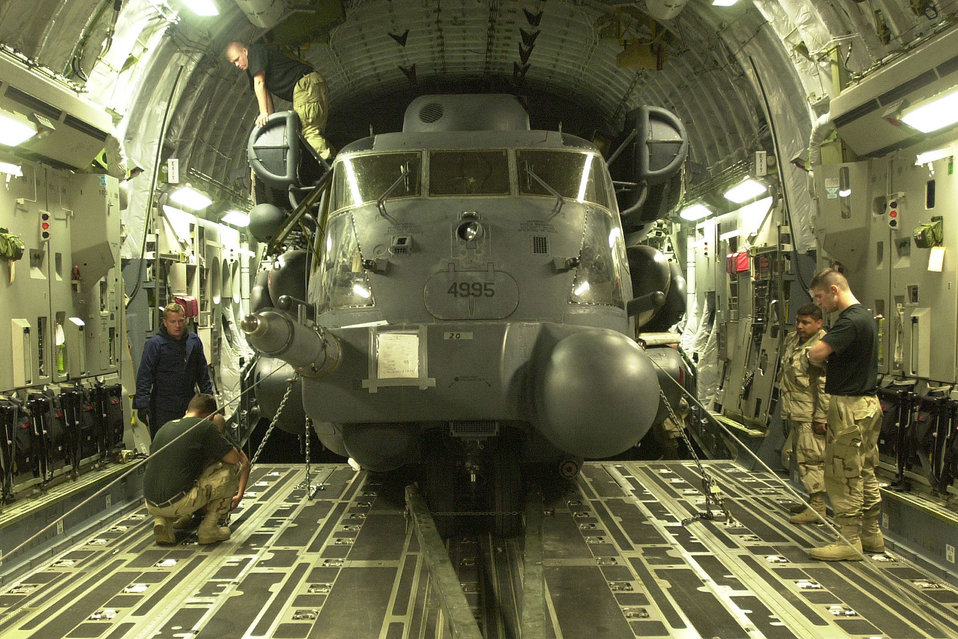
Globemaster lift

OPERATION ENDURING FREEDON -– Airmen from the 16th Special Operations Wing at Hurlburt Field, Fla., offload a MH-53J Pave Low III helicopter from a C-17A Globemaster III at an Operation Enduring Freedom location. The C-17 can carry nearly every type of Air Force and Army air-transportable equipment.